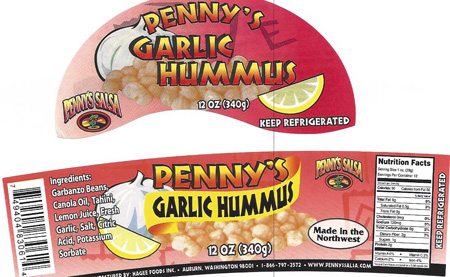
RECALLED – Hummus

July 16, 2013 – Product Recall – Hagee Foods Inc. dba Penny's Salsa Inc. Recalls Hummus Products Because of Possible Health Risk.